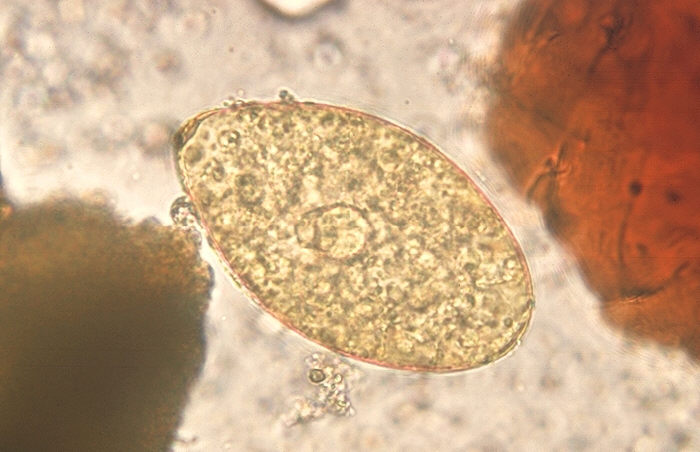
Echinostoma egg. Unstained mount of formalin-preserved feces. Parasite.